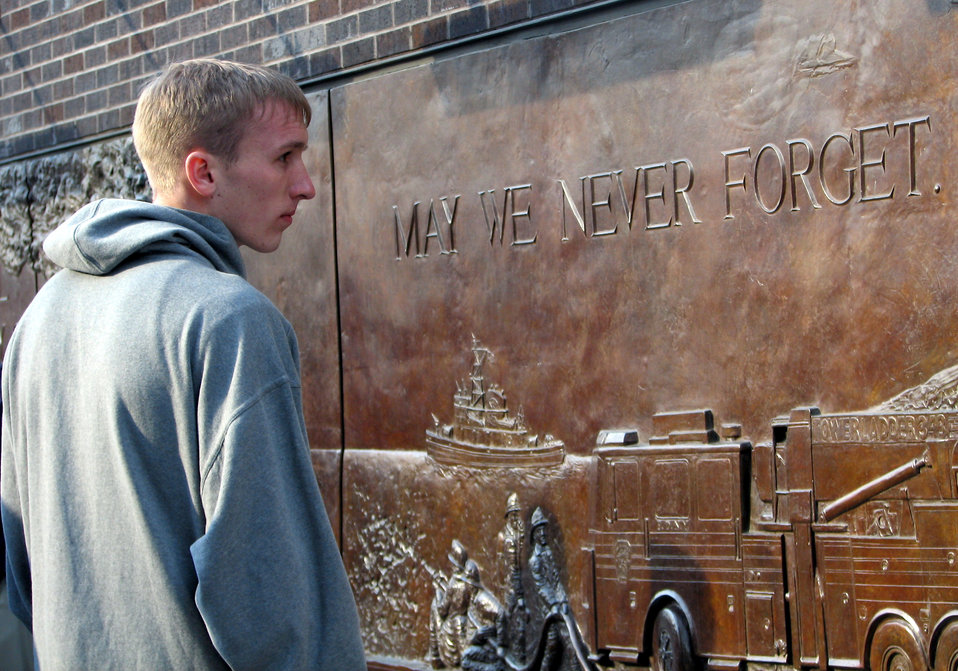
Academy Falcons tour New York

Cadet 1st Class Ryan Teets views the Ladder 10 Memorial at Ground Zero March 25 in New York City. The team is playing in the National Invitation Tournament semifinals March 27 against the Clemson Tigers in Madison Square Garden.